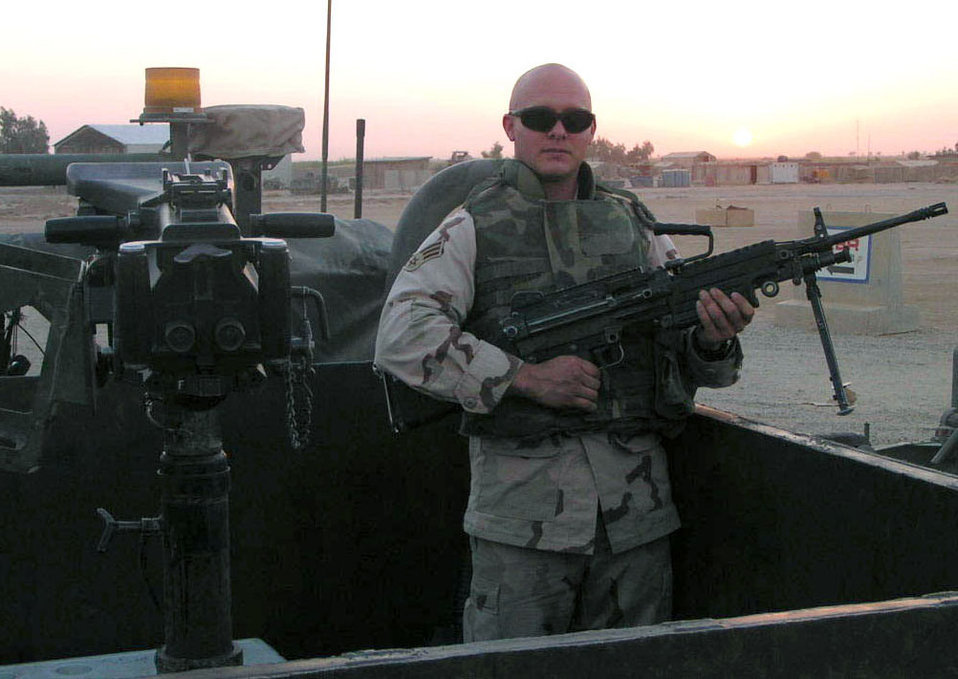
Story of Survival

NORTHERN IRAQ -- Senior Airman Brian Leverton, stands ready with an M-249 rifle before a morning fuel run. Airman Leverton was part of a special Air Force unit that provided security to Army convoys. He was deployed from Whiteman Air Force Base, Mo.